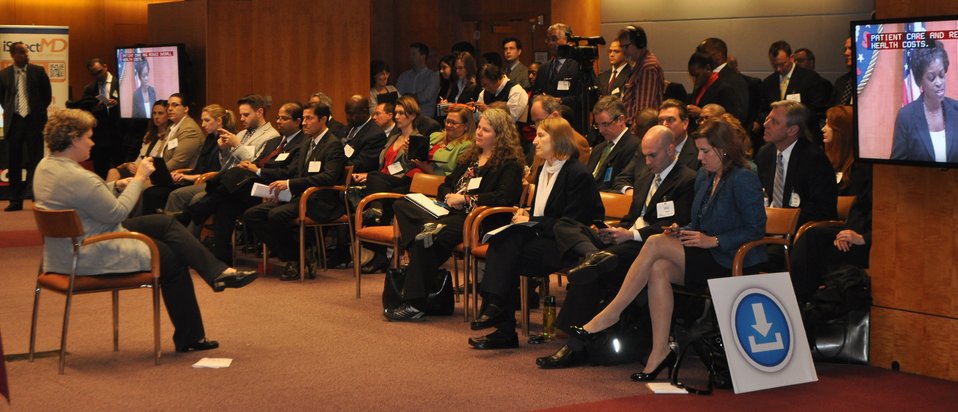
12.6.13 mHealth Innovation Expo

FCC mHealth Innovation Expo.